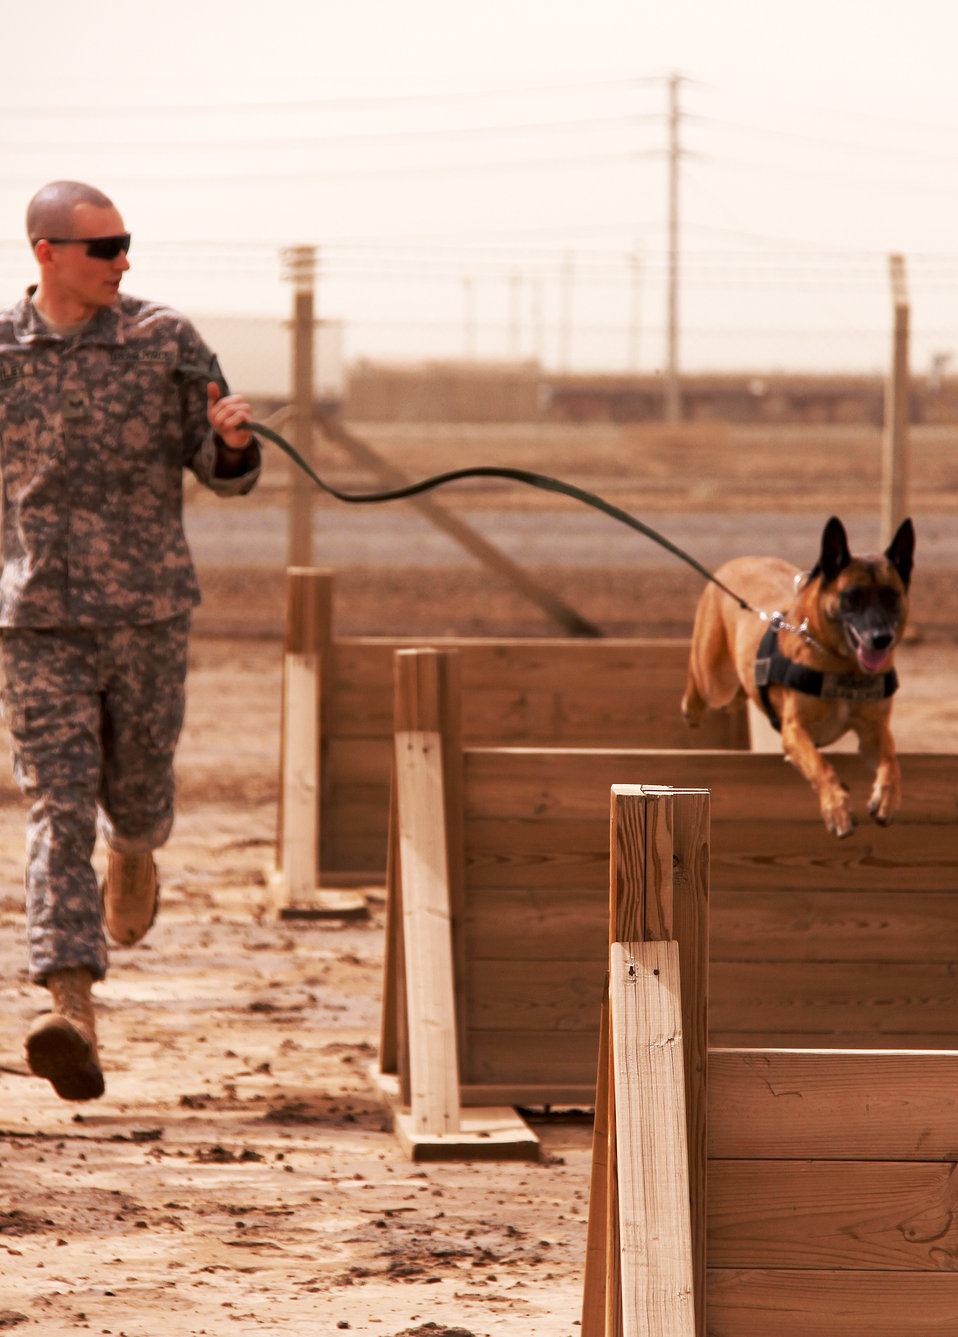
K-9, handler work together to keep servicemembers safe

Senior Airman William Bailey, a military working dog handler attached to the Army's 1st Cavalry Division, keeps Robby, an explosives detector dog, fit by running with him through an obstacle course at Camp Taji, Iraq. A native of Richmond, Va., Airmen Bailey is deployed from Seymour Johnson Air Force Base, N.C.